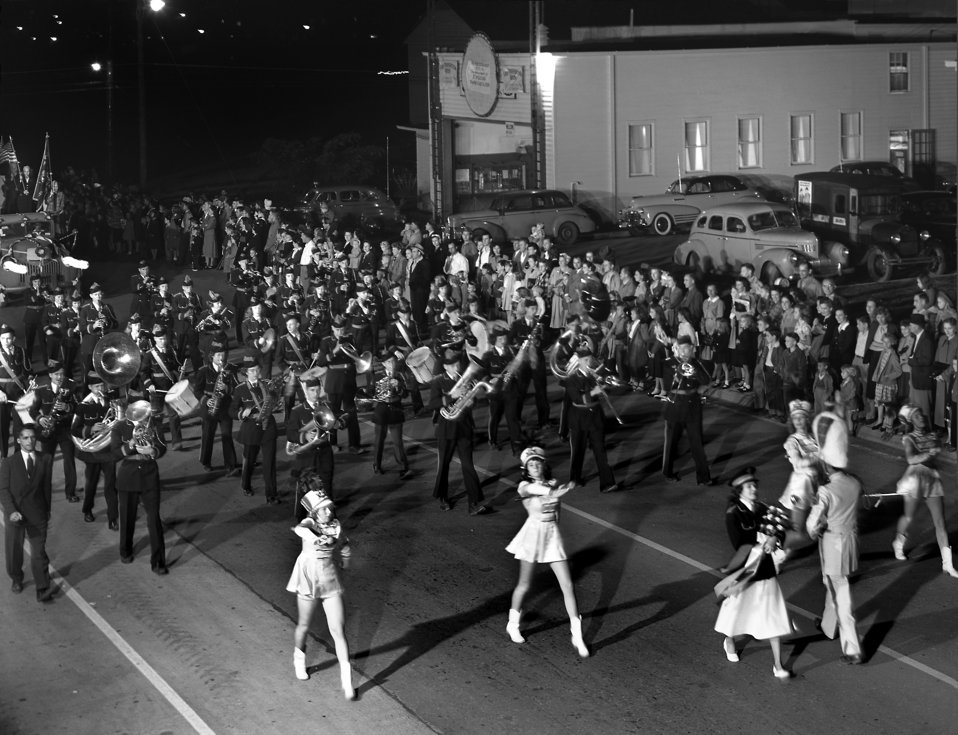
Parade Fire Prevention Week Oak Ridge 1948

5267-7a DOE photo Ed Westcott 10-9-1948 Oak Ridge Tennseess